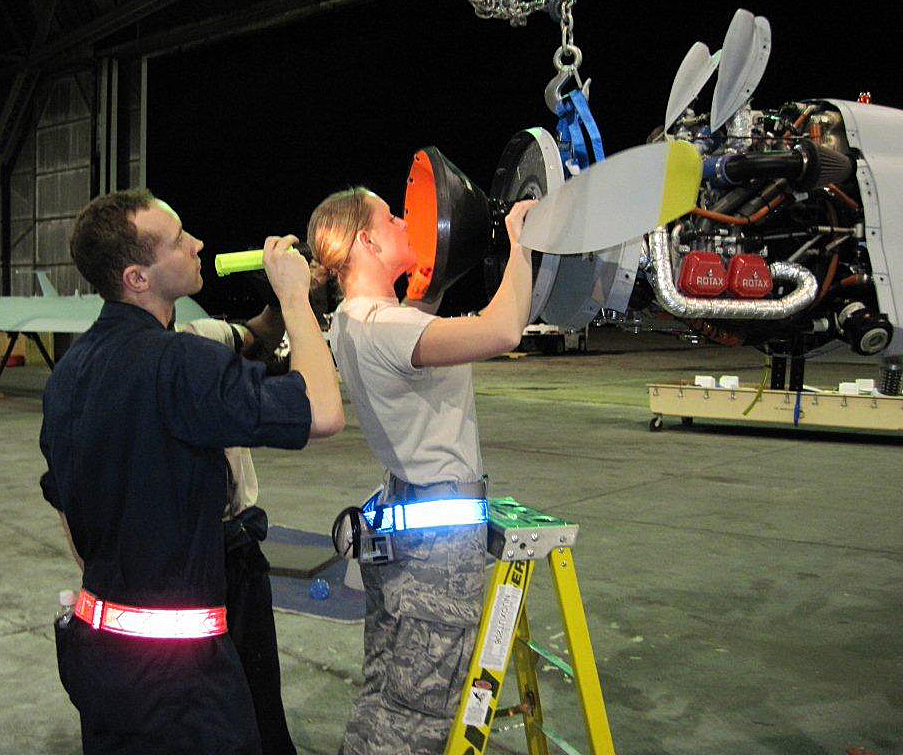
Senior Airman Stephanie Groome, is assisted by another maintainer while she installs a propeller on an RQ-1 Predator during unpack procedures recently. Airman Groome is deployed with a team of 849th AMXS personnel in support of the Operation Unified Response. Airmen Groome is a member of the 849th Aircraft Maintenance Squadron at Holloman Air Force Base, N.M.